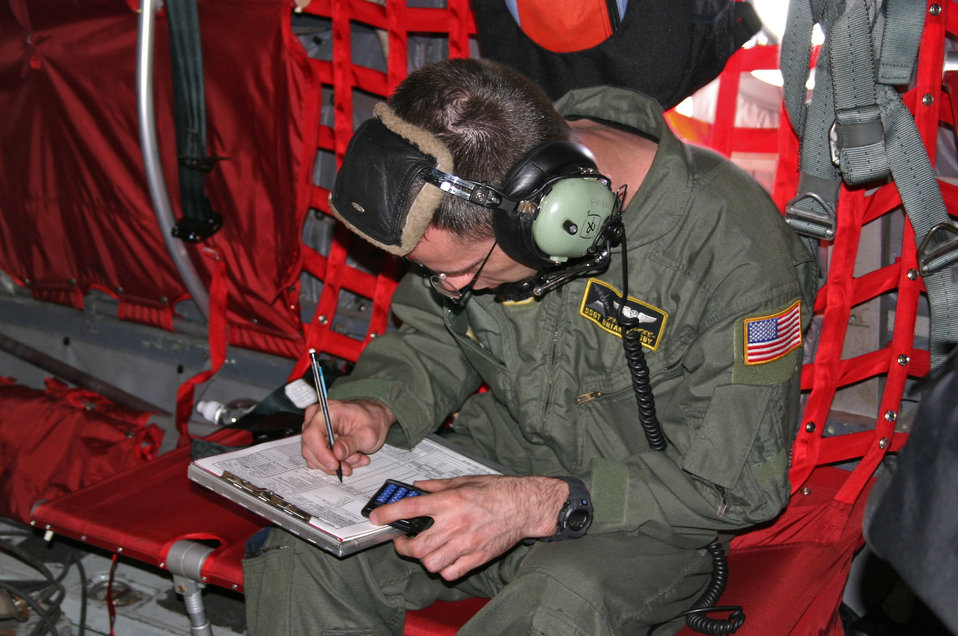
Relief supplies brought to Banda Aceh

BANDA ACEH, Indonesia -- Staff Sgt. Brian Digsby prepares paperwork aboard a C-130 Hercules here on Jan. 10. More than 18,000 Marines, Sailors, Airmen, Soldiers and Coast Guardsmen with Combined Support Force 536 are working with international militaries and nongovernmental organizations to aid the affected people of Thailand, Sri Lanka and Indonesia after a magnitude 9.0 earthquake Dec. 26 triggered devastating tsunamis. International efforts to minimize suffering and mitigate loss of life continue as the CSF 536 servicemembers provide humanitarian assistance supporting Operation Unified Assistance. Sergeant Digsby is a loadmaster assigned to the 374th Air Expeditionary Squadron at Utapao, Thailand.